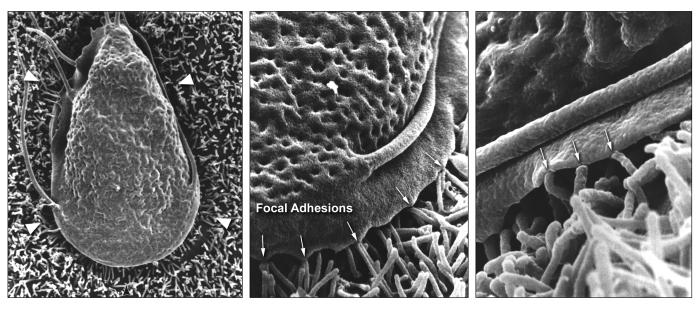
These three scanning electron micrographs (SEM) revealed under successively greater magnifications, some of the ultrastructural morphologic details of a Giardia trophozoite, where it had attached itself to apical microvilli, i.e., numerous small cylindrical structures, some highlighted with white arrowheads in the far left photograph, that covered the mucosal surface of a Caco-2 cultured intestinal epithelial cell. The ventrolateral flange, i.e., ruffle-like structure that surrounds the anterior portion of the protozoan, appeared firmly attached, by way of focal adhesions, to these microvilli.